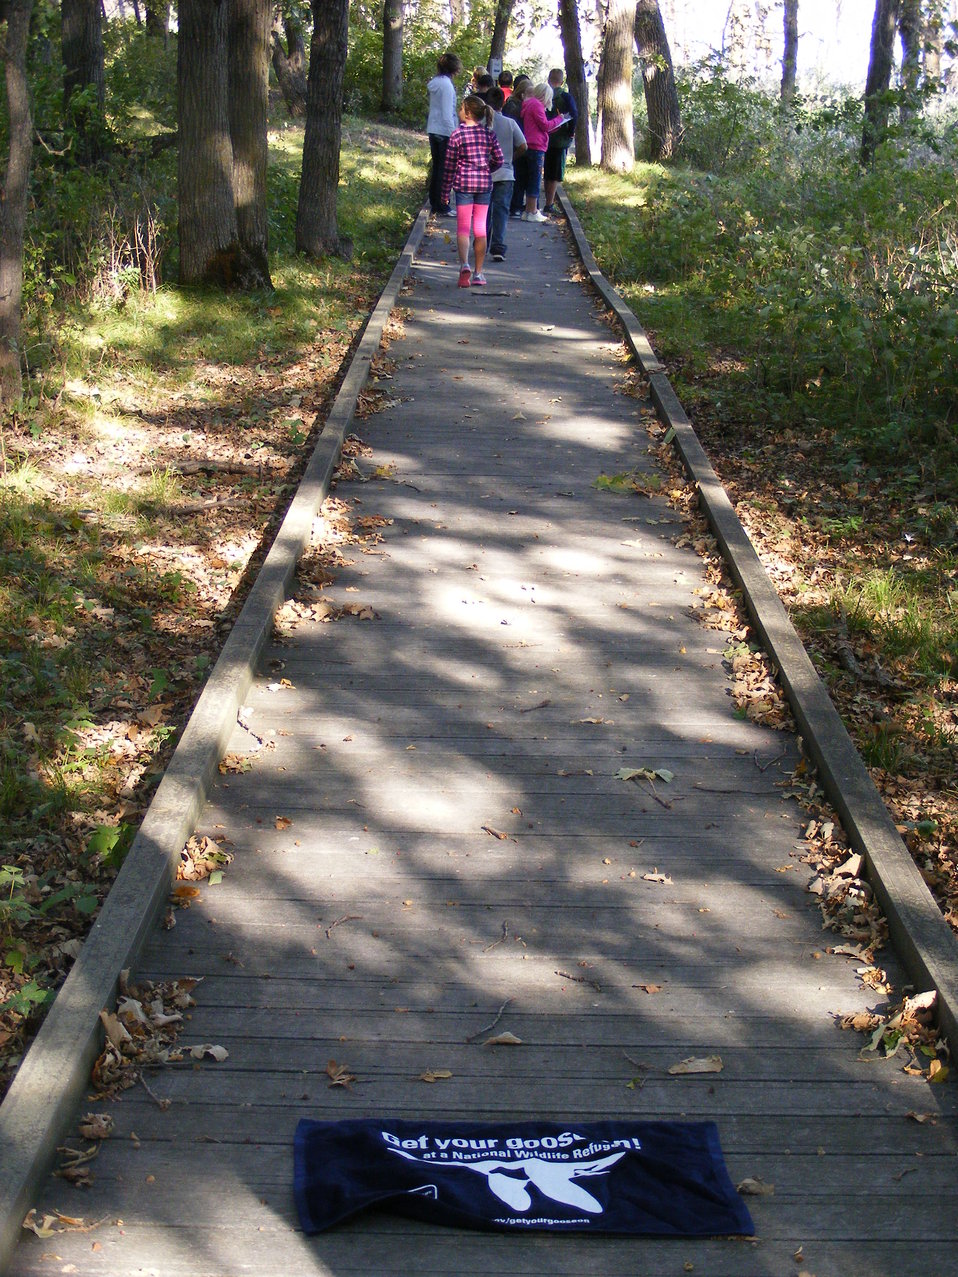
Get Your Goose On!